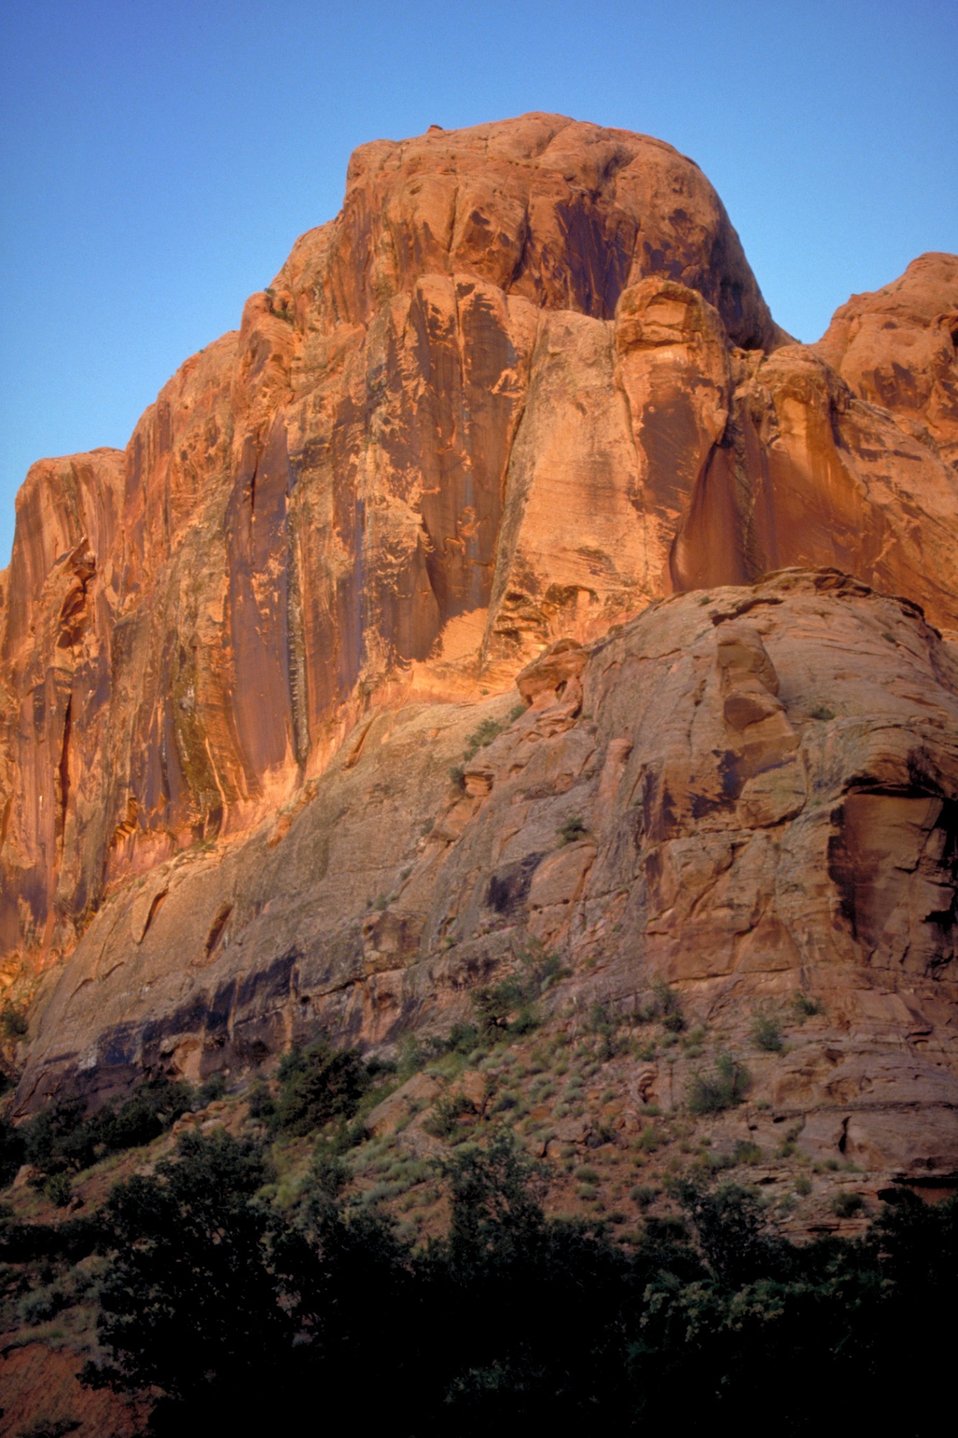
Slickrock near Moab, Utah.